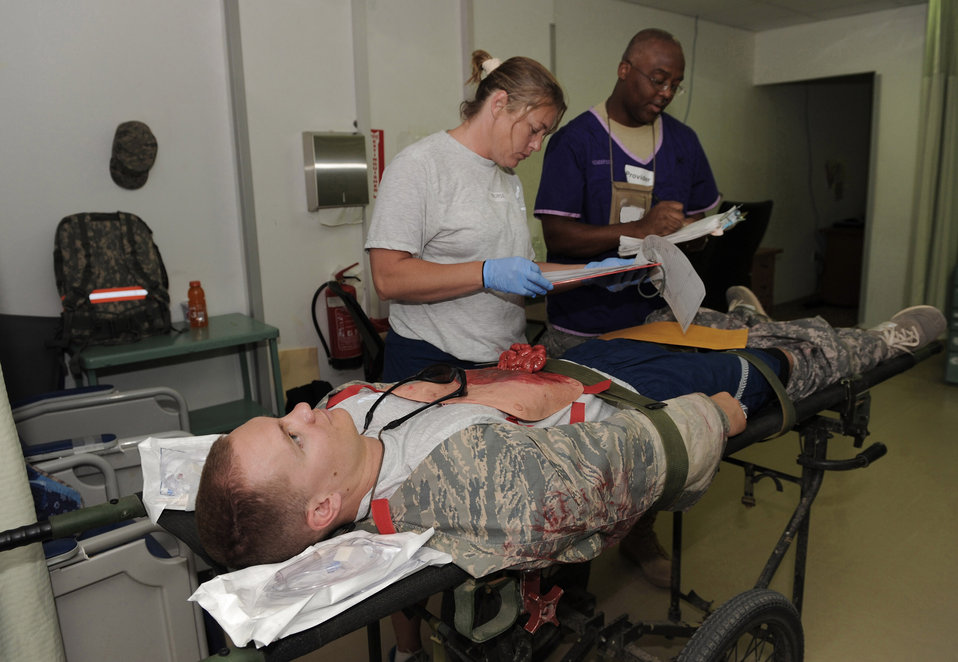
Airmen test emergency response at Joint Base Balad

Staff Sgt. Jonathan Spell acts as a patient during a major accident response exercise as Capt. Sherri Hiser and Col. James Henderson attempt to provide care for his